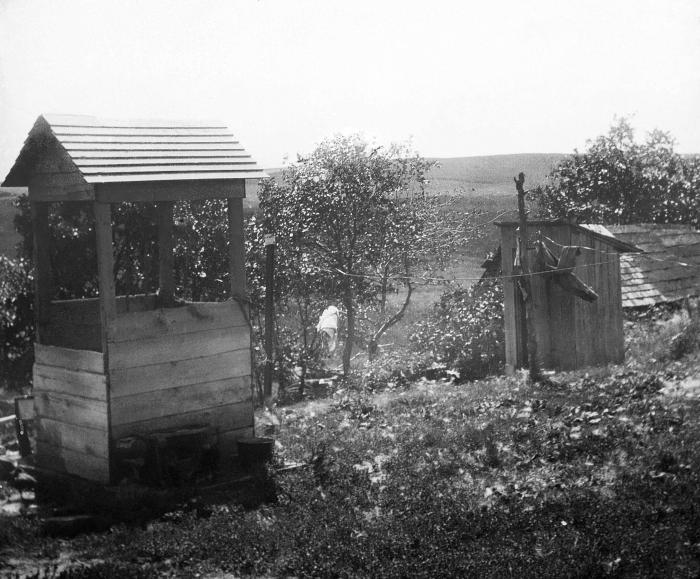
This 1909 photograph depicted an improperly constructed 'dug-type' well on the grounds of a Minnesota farm home. The original image was scanned from a glass lantern slide donated by the Minnesota Department of Health, and was one of a series of instructional photos used by the Minnesota Board of Health to train public health workers. The focus of the images, and the training, was to promote procedures to be implemented when protecting water supplies from bacterial contamination.